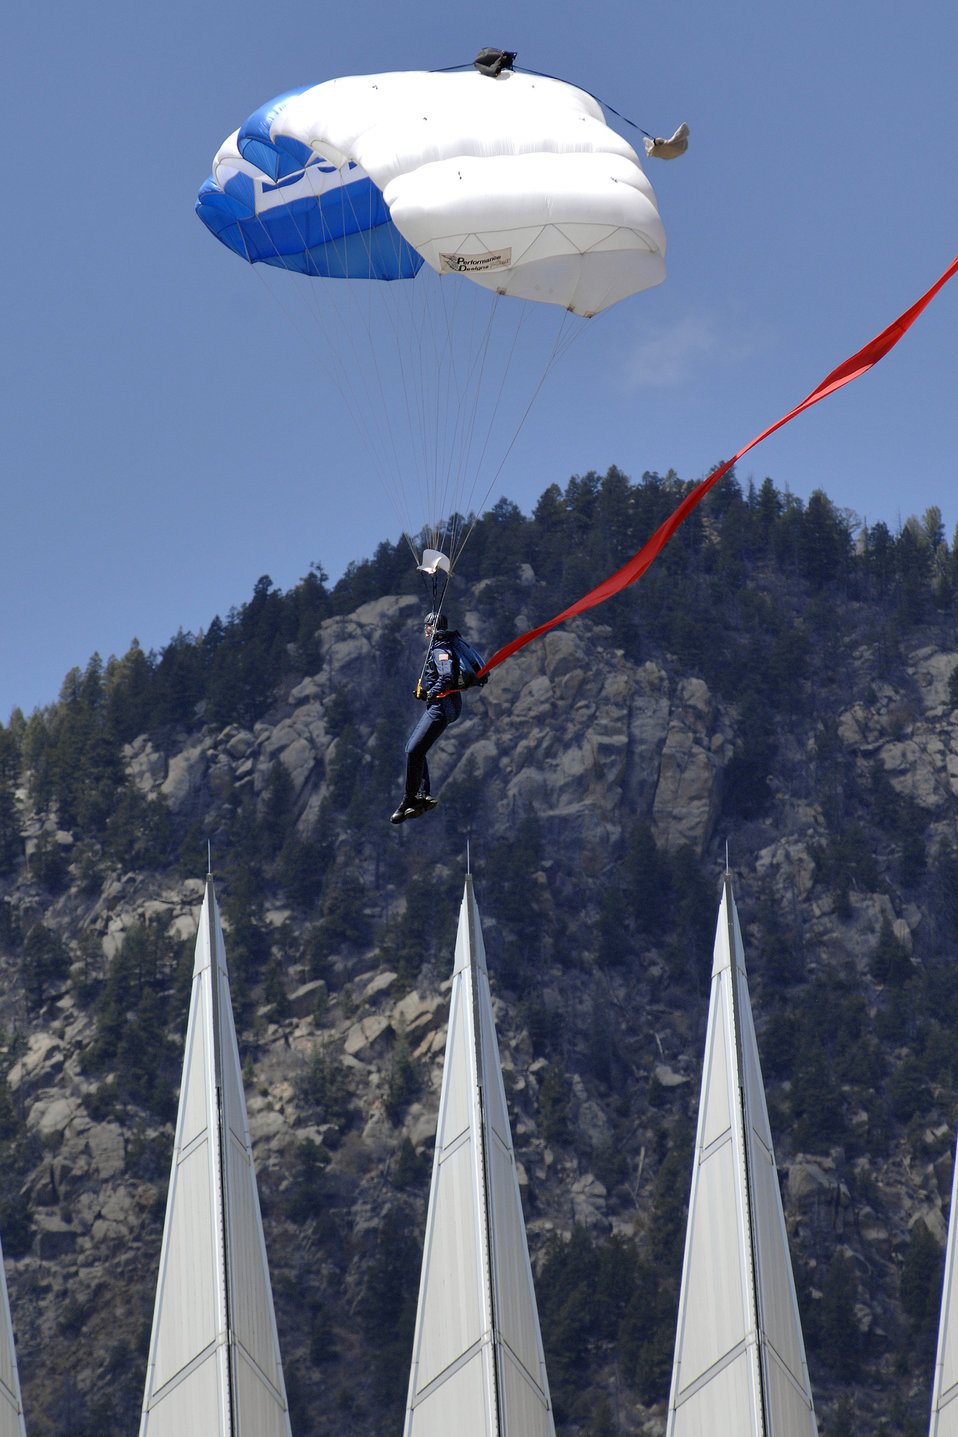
Wings of Blue

A member of the U.S. Air Force Academy's Wings of Blue Parachute team carefully maneuvers his canopy away from the spires of the Cadet Chapel toward a successful landing in the Academy's cadet area in Colorado May 6. The team performed a demonstration jump during the afternoon meal formation in front of the entire cadet wing and Academy visitors.